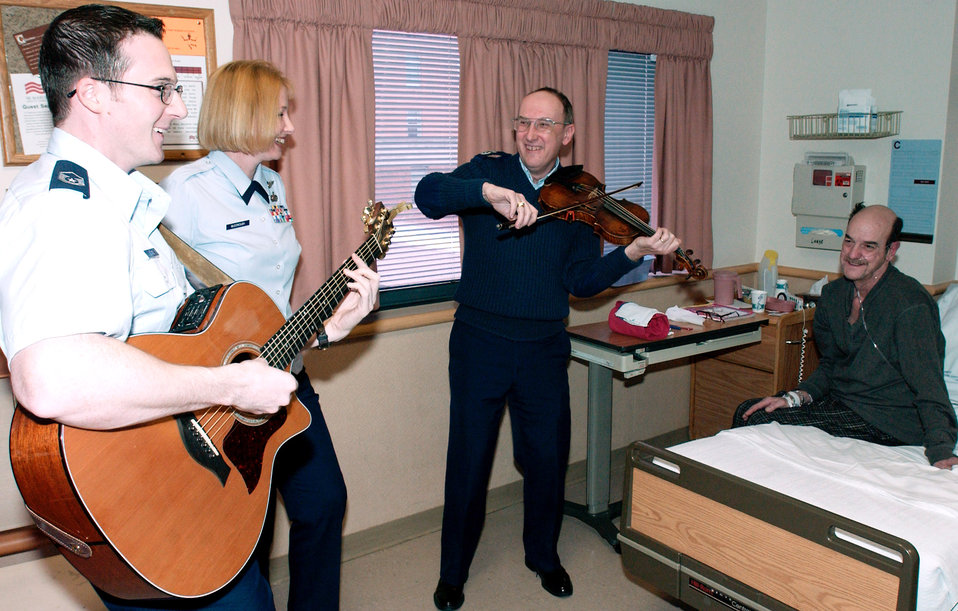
Salute to veterans

BALTIMORE (AFPN) -- Members of the U.S. Air Force Band's Silver Wings entertain a hospitalized veteran at the Baltimore veterans' hospital during the National Salute to Hospitalized Veterans Feb. 10. Silver Wings, based at Bolling Air Force Base, D.C., includes (from left) Master Sgts. Matt Ascione and Marie McDonough and Chief Master Sgt. Jim Queen. The salute, established in 1978, is designed to pay tribute to America's veterans, increase awareness of the role of Department of Veteran Affairs medical facilities, and encourage people to visit hospitalized veterans.